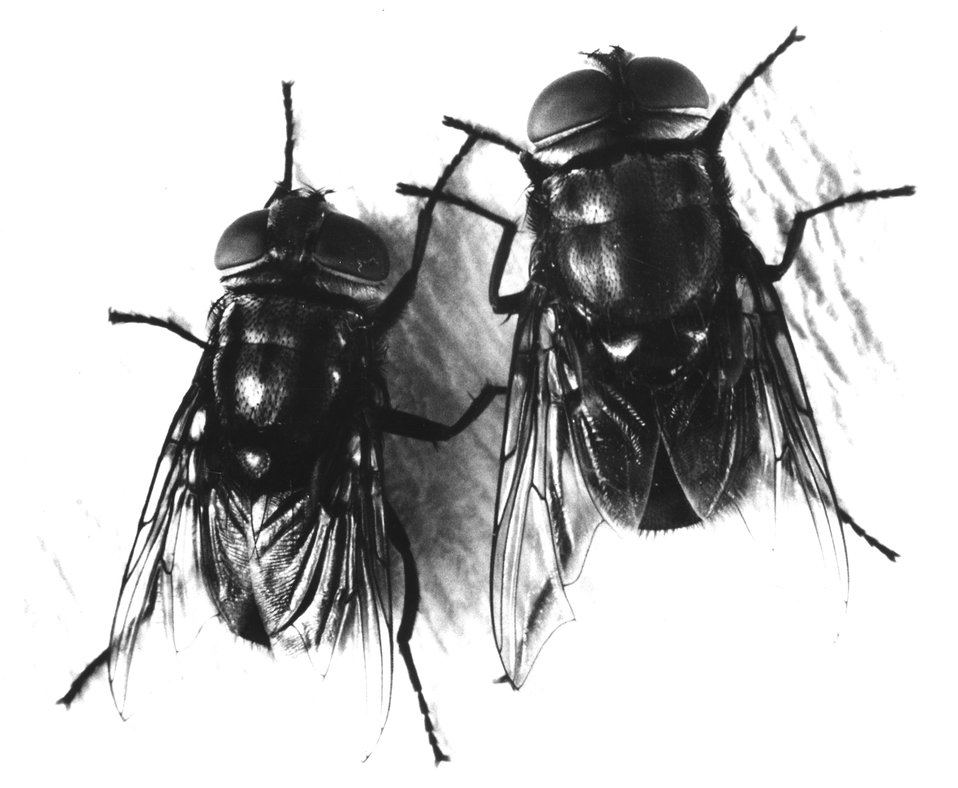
Screw worn fly has a bluish-green body and an orange colored head. Circa 1964.